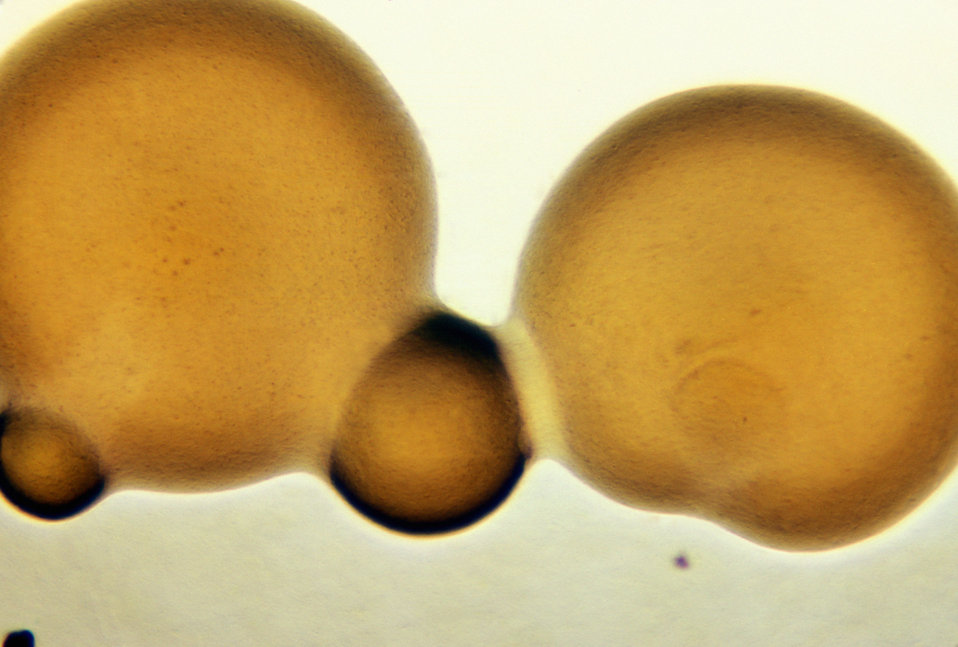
Photomicrograph of Neisseria gonorrhoeae colonies growing on GC base media with IsoVitalex after 24 hours.